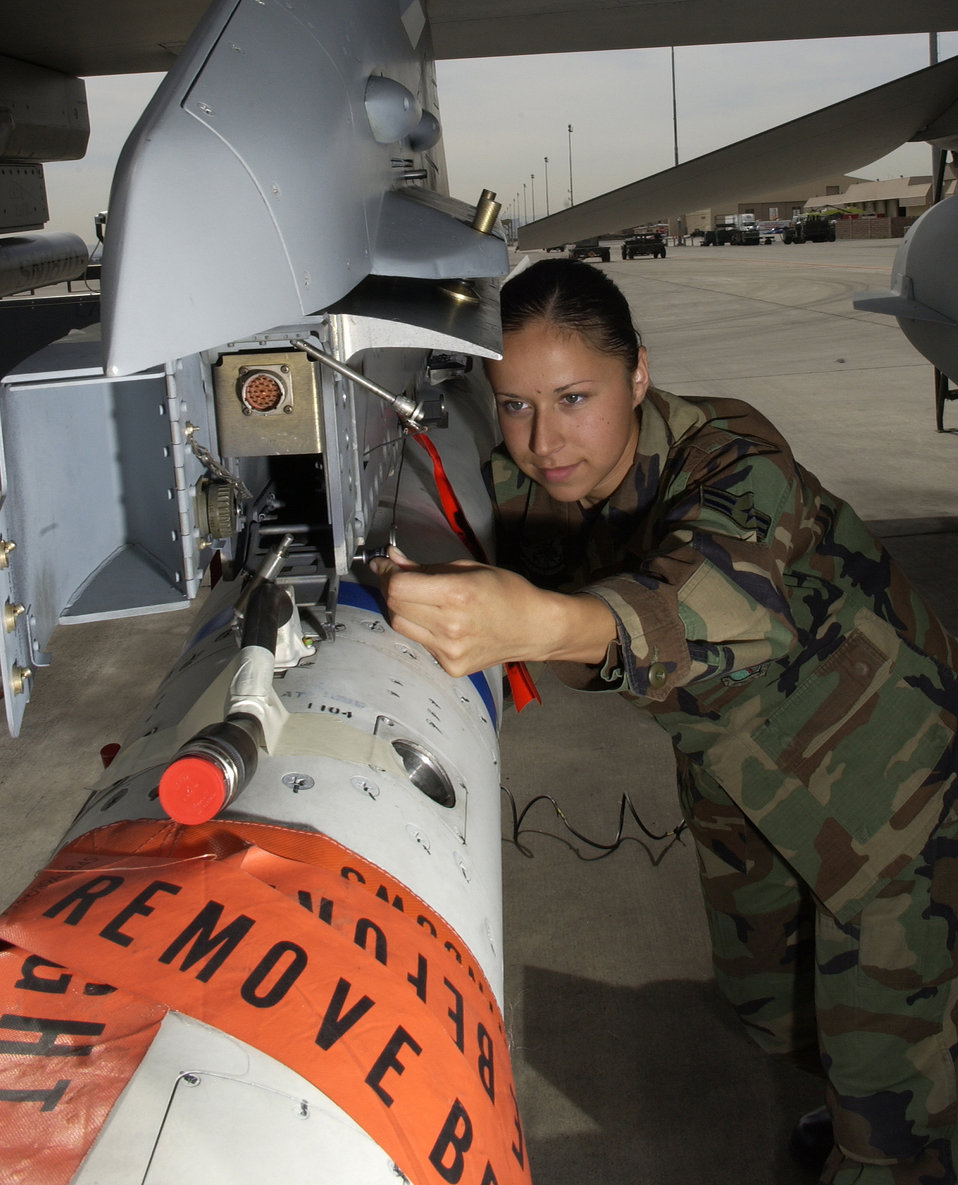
Missile unloading

NELLIS AIR FORCE BASE, Nev. -- Airman 1st Class Mabel Arreola unloads an AGM-88 high-speed anti-radiation missile from an F-16 Fighting Falcon after a training mission here March 18. She is a weapons loader assigned to the 35th Fighter Wing at Misawa Air Base, Japan.